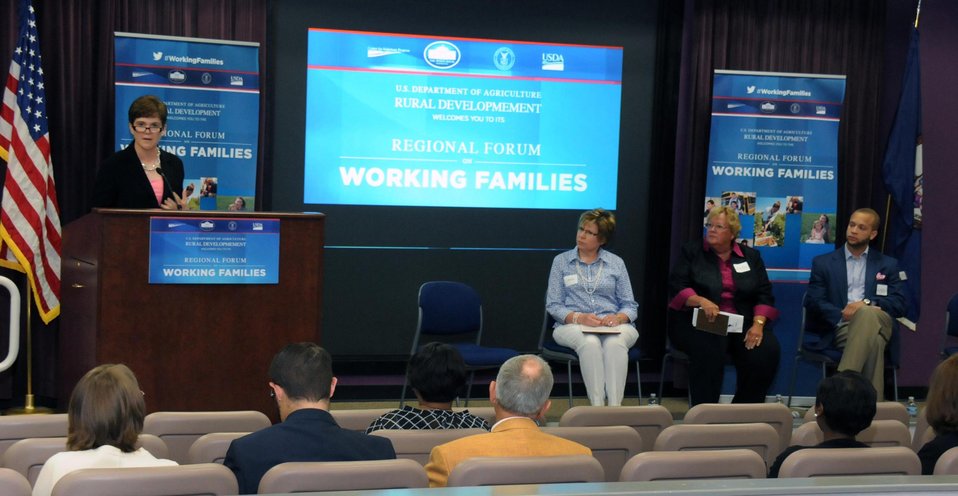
Agriculture Deputy Secretary Krysta Harden speaks at a regional forum of the White House Summit on Working Families in Petersburg, VA Wednesday, Jun. 11, 2014. The forum brings together stakeholders with government and regional leaders to identify initiatives for working families and businesses in rural areas. This forum is part of a series of regionally hosted conversations leading up to the Jun. 23, 2014 White House Summit on Working Families.